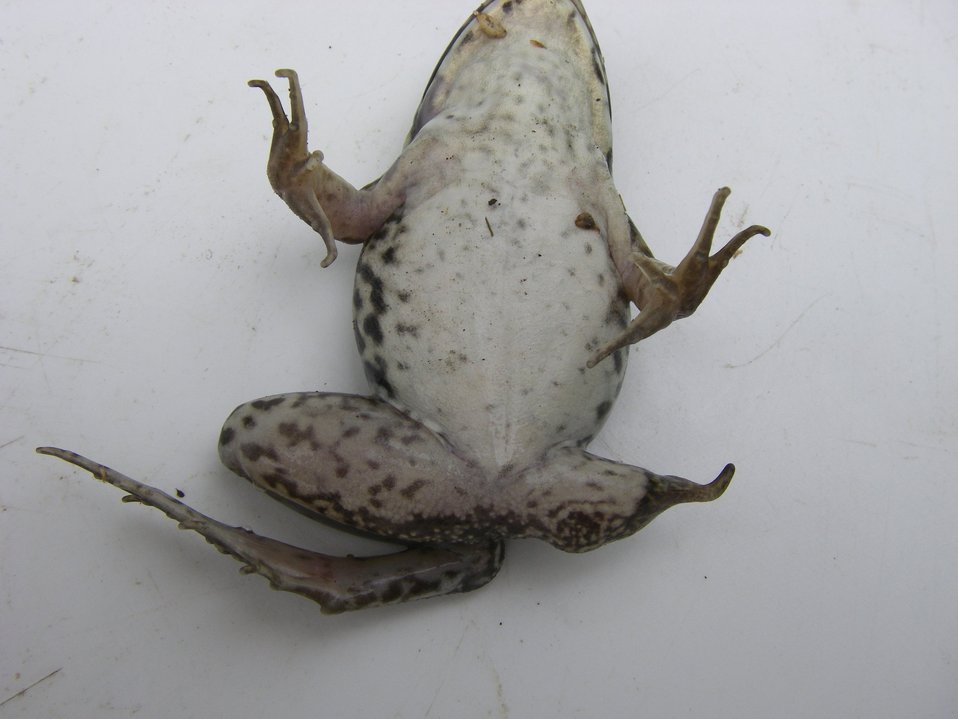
Great Swamp green frog with partially missing hindlimb

(USFWS) Green frog (Lithobates clamitans) with a partially missing hindlimb. Location: Great Swamp NWR, NJ.